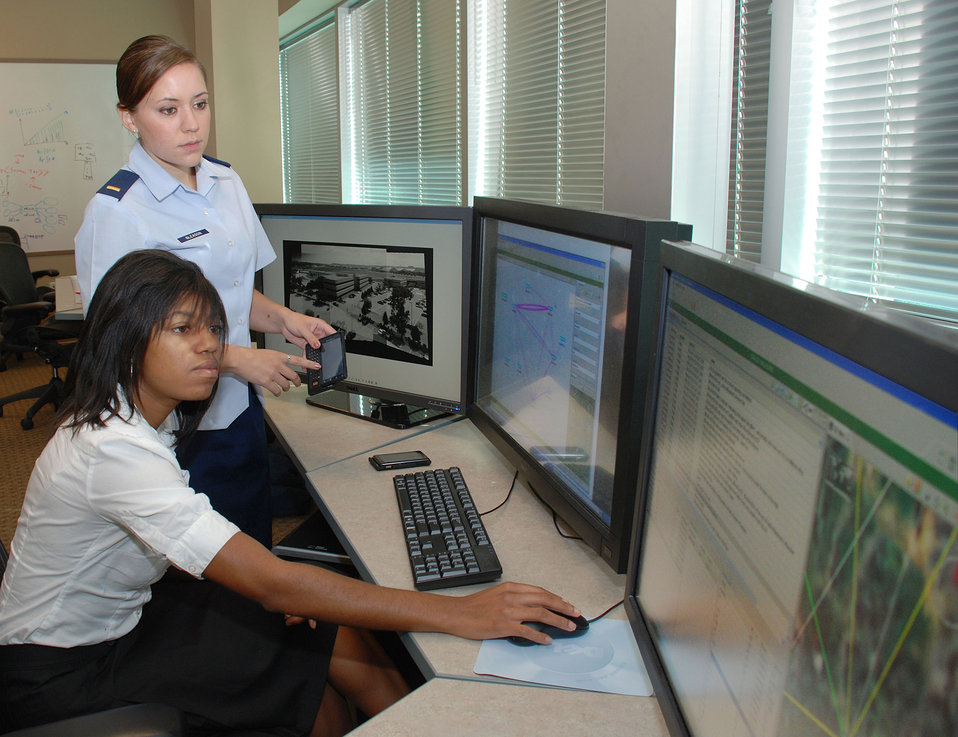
CityBeat Project

Second Lt. Katherine Gleason and Kelcey McKinney, a student from Ohio State University, study social networking patterns Aug. 6, 2010, in the 711th Human Performance Wing's Air Force Research Laboratory at Wright-Patterson Air Force Base, Ohio. They are using the Behavior Modeling Branch's CityBeat Project's analysis tools to assist in behavior evaluation.